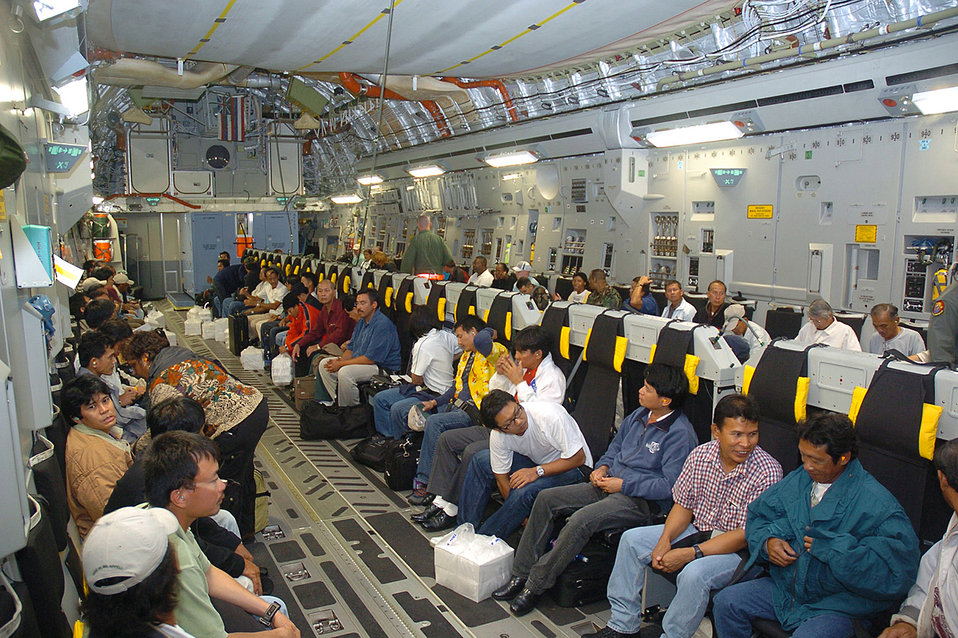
Wake Island evacuates

Some of the 188 Wake Island evacuees take their seats on a C-17 Globemaster III, from Hickam Air Force Base, Monday prior to Super Typhoon Ioke reaching the tiny U.S. territory. Ioke is expected to hit the island around 8.p.m. EDT Wednesday.